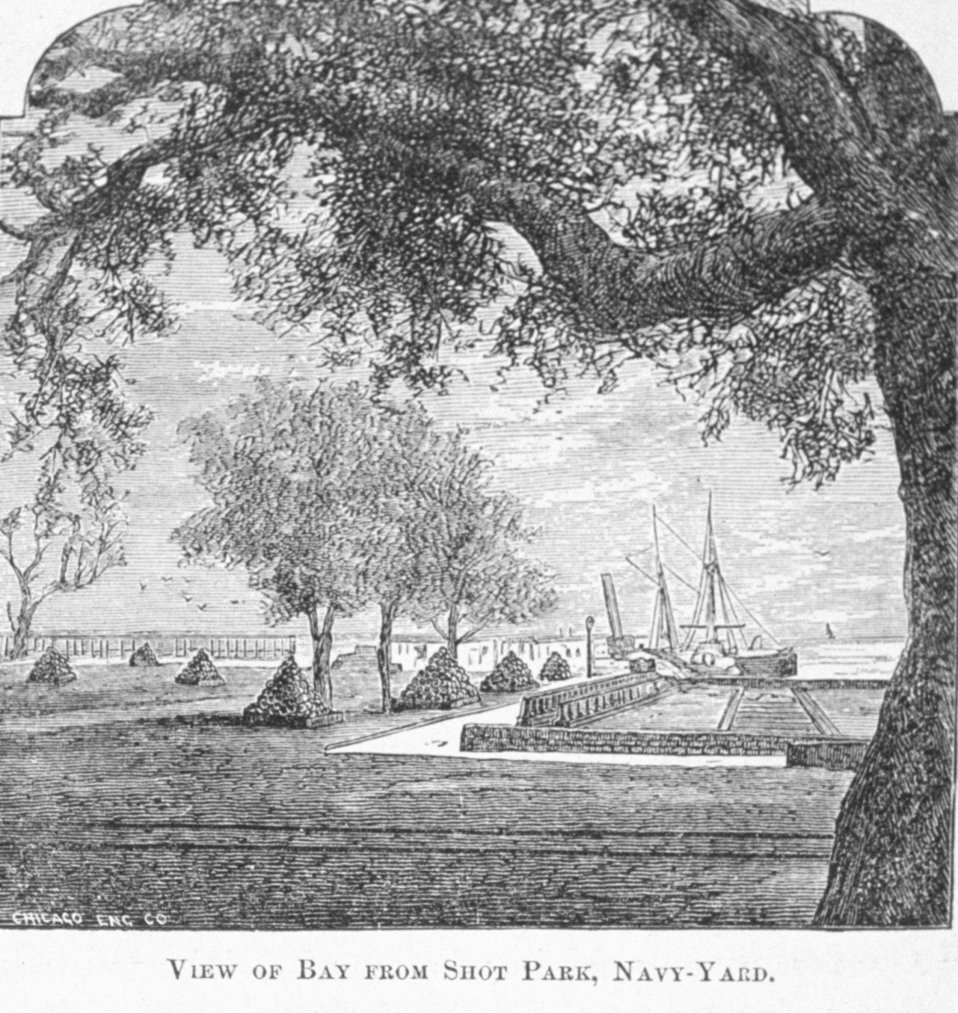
View of Bay from Shot Park, Navy Yard at Pensacola - in 'Florida for Tourists, Invalids, and Settlers' by George M. Barbour, 1881. Library Call No. F316 .B23 1881.